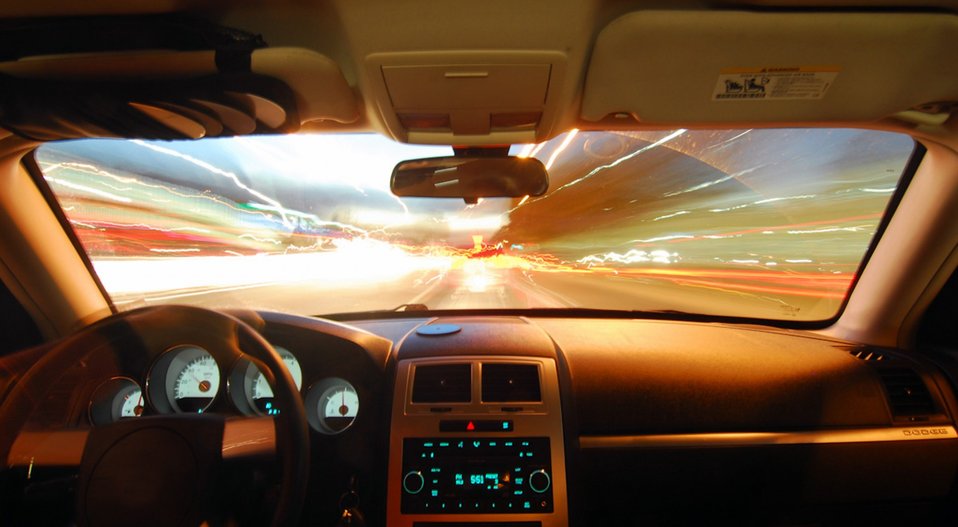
In the cockpit.